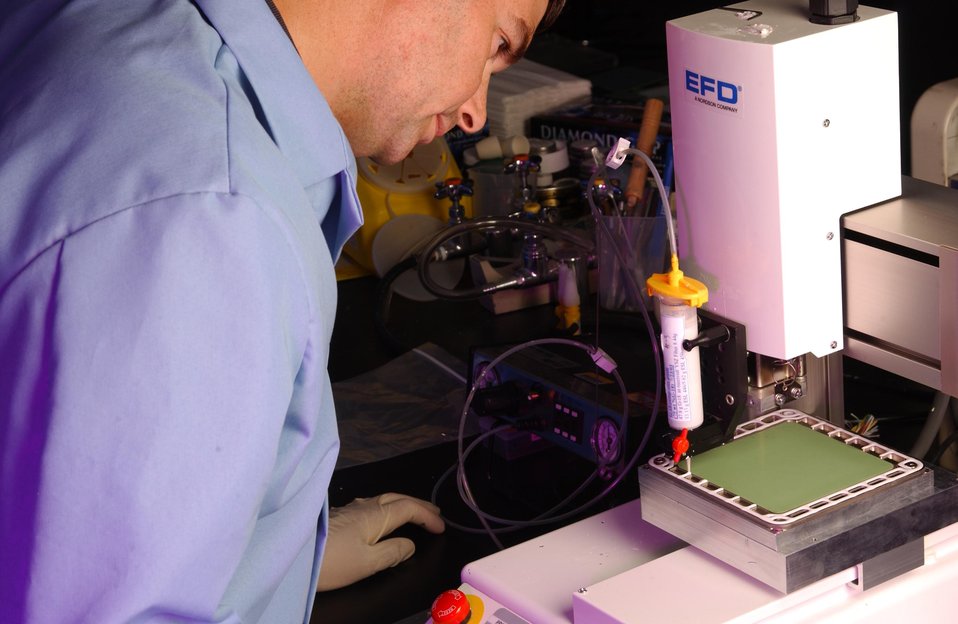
A PNNL RESEARCHER PUTS A SEALANT ONTO A FUEL CELL USING A COMMERCIAL ROBOTIC ARM.

THE SEALANT, MADE OF A PNNL-DEVELOPED GLASS POWER AND A COMMERCIAL BINDER SYSTEM, IS USED TO SEAL INDIVIDUAL CELLS TO ONE ANOTHER TO FORM STACKS. THE GOAL IS TO CREATE A 60 CELL-STACK TO PRODUCE 5 KILOWATS OF ENERGY.